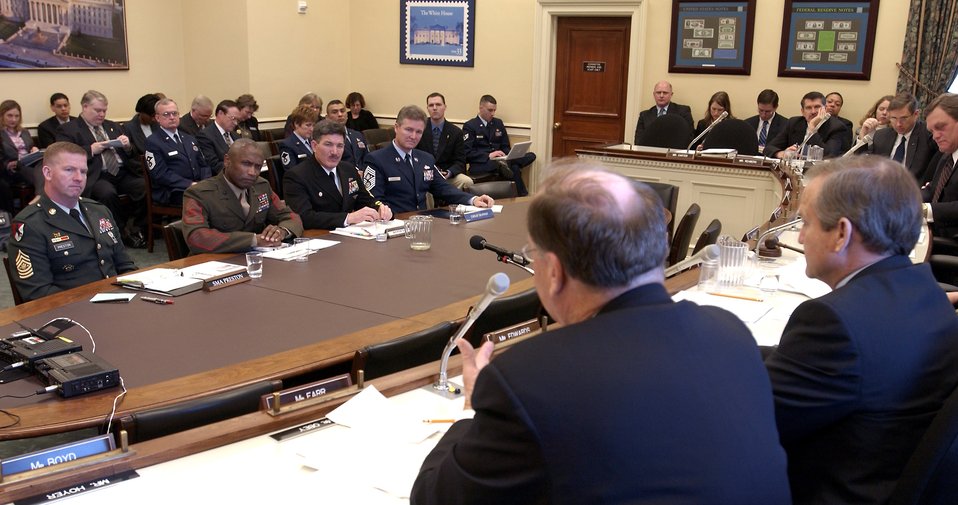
Murray testifies at new quality of life committee

WASHINGTON -- Each military branch's senior ranking enlisted servicemember testified before the newly formed House Appropriations Committee subcommittee on military quality of life and veterans' affairs here Feb. 16. They are (from left) Sgt. Maj. of the Army Kenneth O. Preston, Sgt. Maj. of the Marine Corps John L. Estrada, Master Chief Petty Officer of the Navy Terry D. Scott and Chief Master Sgt. of the Air Force Gerald R. Murray.